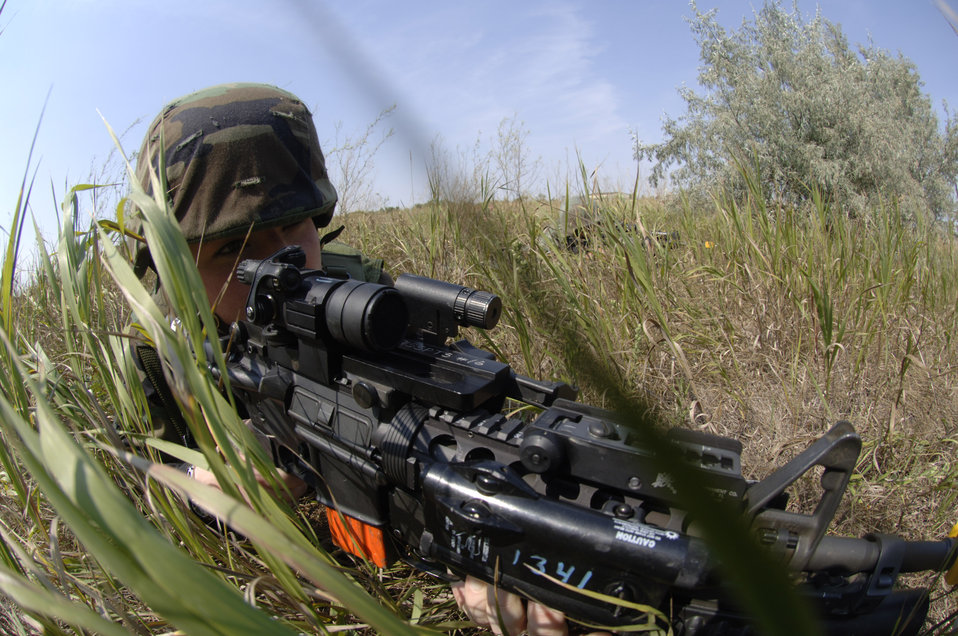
Unique mission: Guarding 91st Space Wing missile complex

Senior Airman Melissa Philhower makes a tactical move during a coordinated security training exercise Aug. 22. The Airman from Orlando, Fla., is with the 91st Missile Security Squadron, Minot Air Force Base, N.D. Once in view of the facility, this team will form another 360 formation and provide outer area security while another team enters the facility.